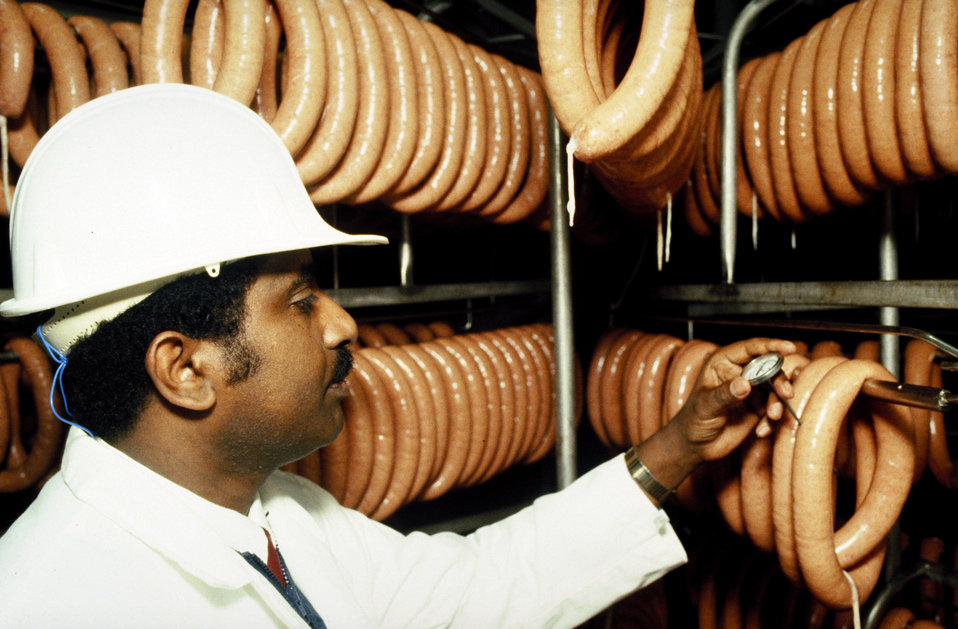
U.S. Department of Agriculture (USDA) Food Safety Inspection Service (FSIS) inspector checks the temperature of sausages at various control points to compare them with those measured and recorded by the plant to prevent multiplication of pathogenic bacteria in compliance with Hazard Analysis and Critical Control Points (HACCP) issued by FSIS on June 15, 1995.